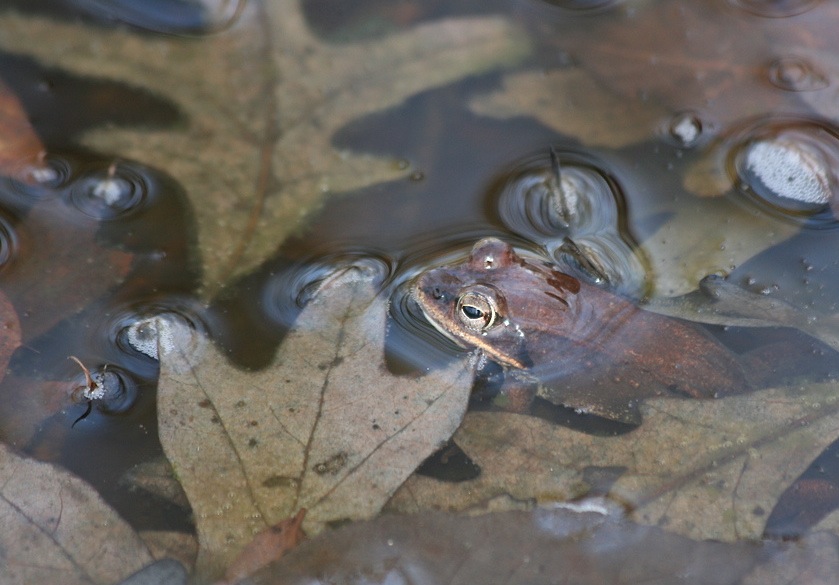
1st wood frogs are calling ...

...from vernal pools on Rhode Island National Wildlife Refuge. Staffers reported hearing their mating songs on March 3, 2012
Photo: Linda Ruth, Creative Commons, 2011